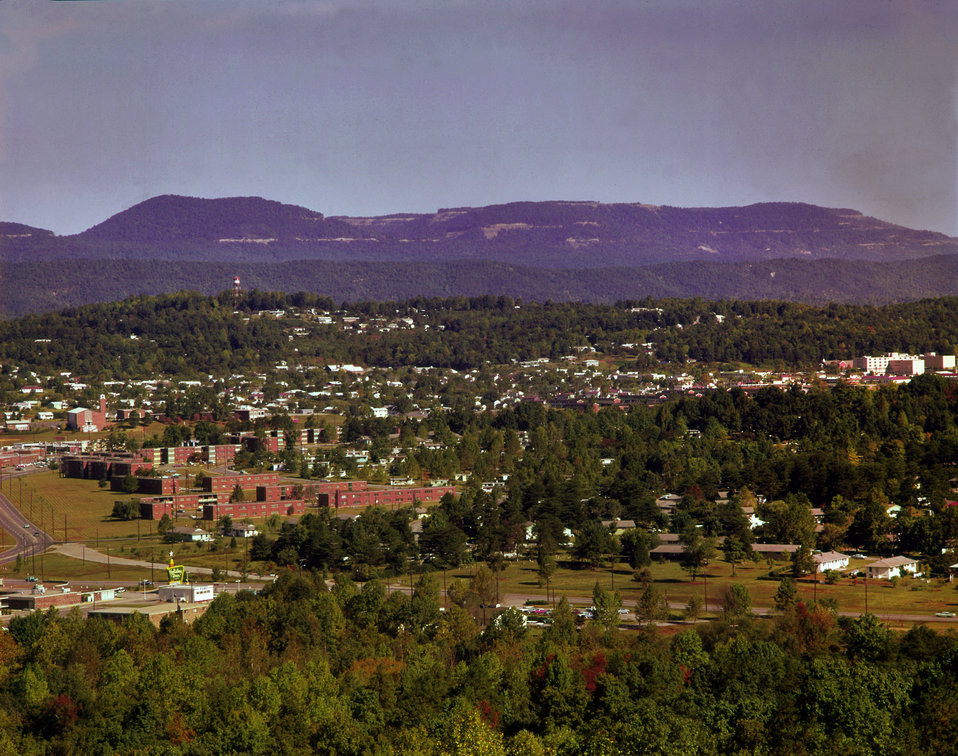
Oak Ridge Residential Aerial

DOE photo by Ed Westcott 1960s Oak Ridge Tennessee